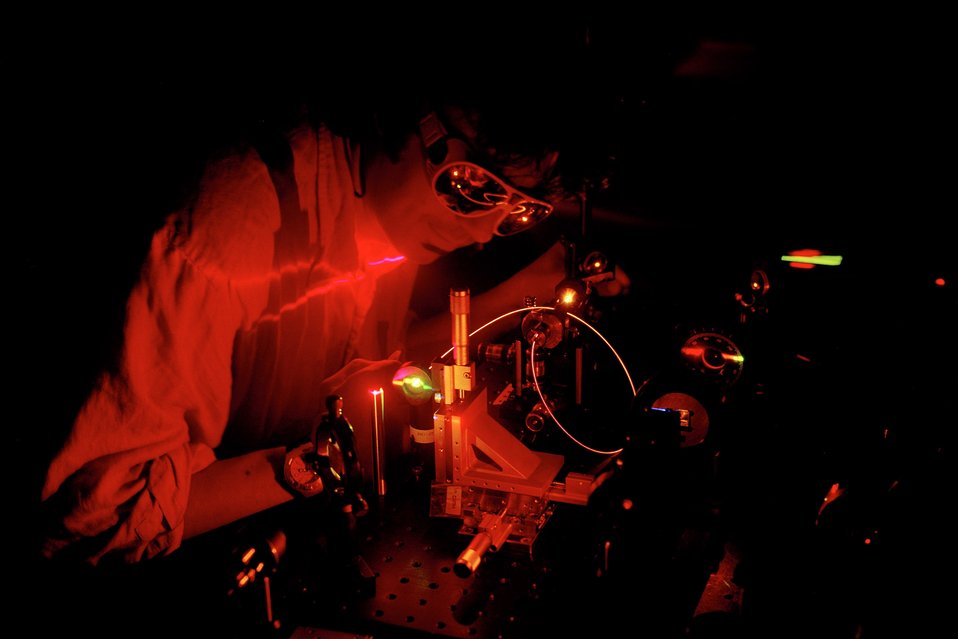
LOS ALAMOS NATIONAL LABORATORY LASERS RANGE IN SIZE FROM MICROSCOPIC DIODE LASERS TO DESKTOP UNITS TO ROOM SIZED LASERS THAT STUDY INERTIAL CONFINEMENT FUSION AND WEAPONS PHYSICS.